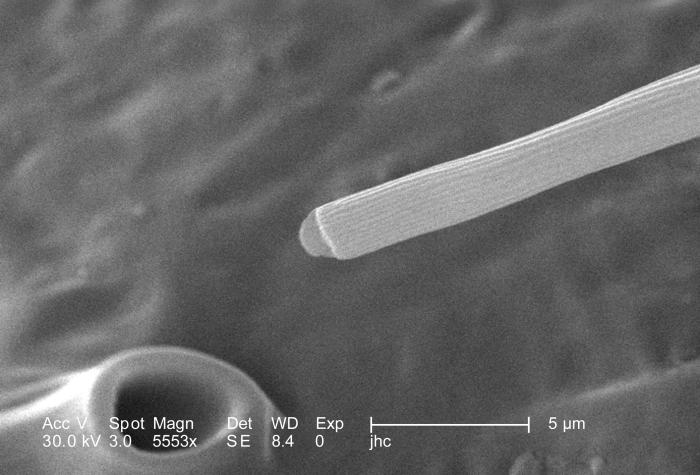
Under this highly magnified scanning electron micrographic (SEM) view, some of the wondrous ultrastructural shapes found on the surface of an unidentified white moth were revealed. This moth, discovered deceased in the Decatur, Georgia suburbs, was a member of the Phylum Arthropoda, Order Lepidoptera. Both the scale, and the exoskeleton itself, are both made up of the same material known as 'chitin'. Chitin is a molecule that itself is made up of bound units of acetylglucosamine, joined in such a way as to allow for increased points at which hydrogen bonding can occur. In this way chitin provides increased strength, and durability as an exoskeletal foundation. This chitinous exoskeleton gives rise to a myriad of morphologic shapes, including this scale, setae, antennae, legs, and mouthparts.